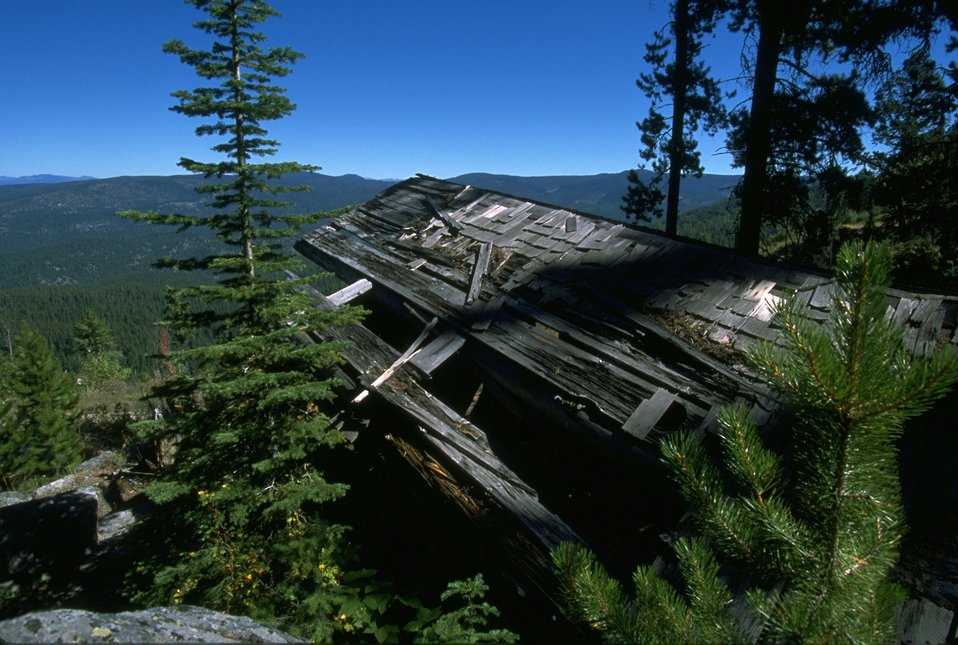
Coloma Ghost Town--collapsing cabin